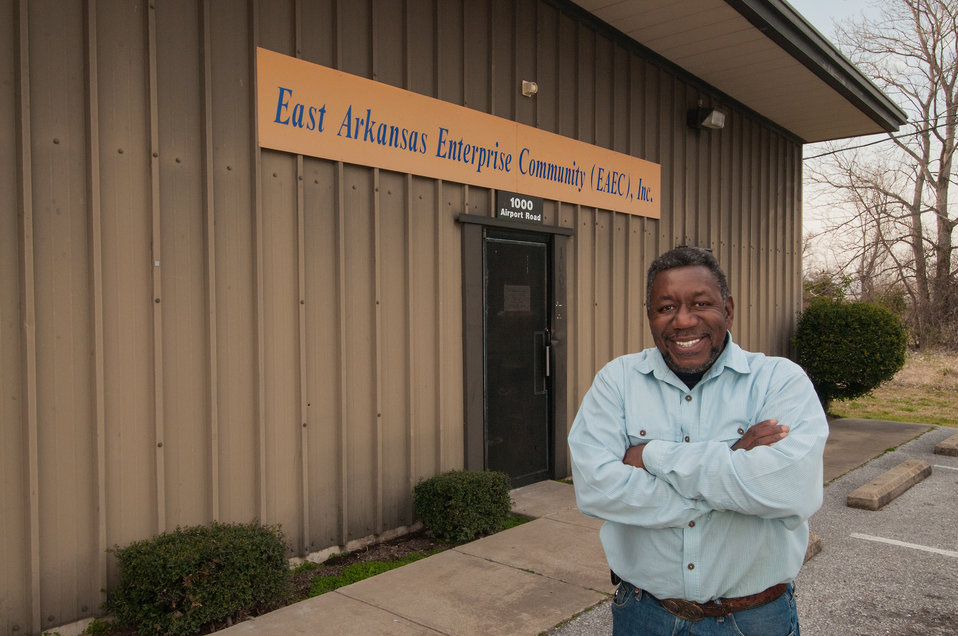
U.S. Department of Agriculture (USDA) Arkansas Strike Force Leader Charlie Williams stands in front of the East Arkansas Enterprise Community, (EAEC) Inc. in Forrest City, AR on Mar. 4, 2013. The EAEC is a beneficiary of the Seeds of Change Implementation Plan organized by USDA in partnership with Heifer International (an International organization whose mission is to work with communities to end hunger and poverty and care for the Earth) and various for-profit and non-profit organizations. The scope of the plan is to use sustainable agriculture to build food systems in the Arkansas Delta. The program has evolved into the Arkansas Delta Seeds of Change (ADSOC). The EAEC is one of 42 community-based organizations located in high poverty areas in the U.S. to benefit from the ADSOC Initiative.